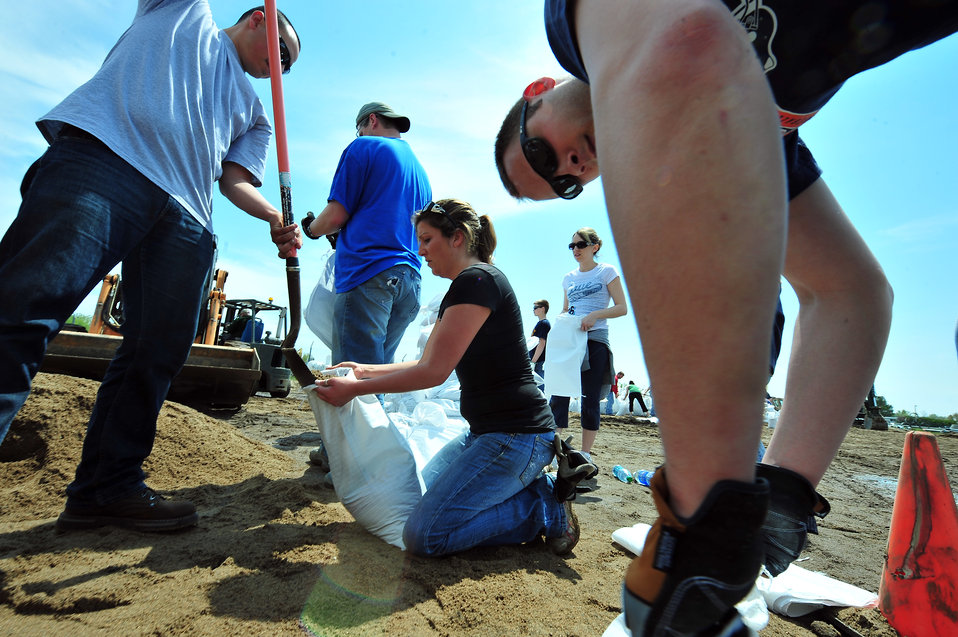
Minot Airmen help neighbors as flood water rises

Airmen and local citizens work together to make sandbags at the Minot Public Works June 1, 2011, in Minot, N.D. In preparation for possible flooding, the city of Minot, with assistance from Airmen from Minot Air Force Base, North Dakota National Guard as well as many other organizations, are setting up secondary dikes along the river. The Souris River threatens to break the levies already in place, thousands of Minot citizens, including military members, their families and DOD civilians, have been forced to evacuate the area.